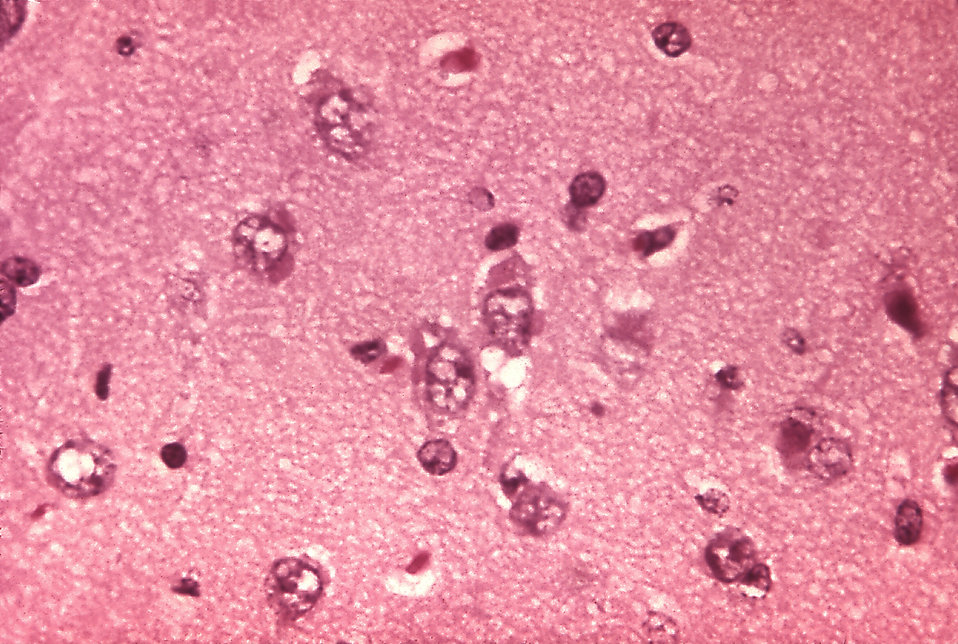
This micrograph depicts the histopathologic changes associated with rabies encephalitis prepared using an H&E stain.